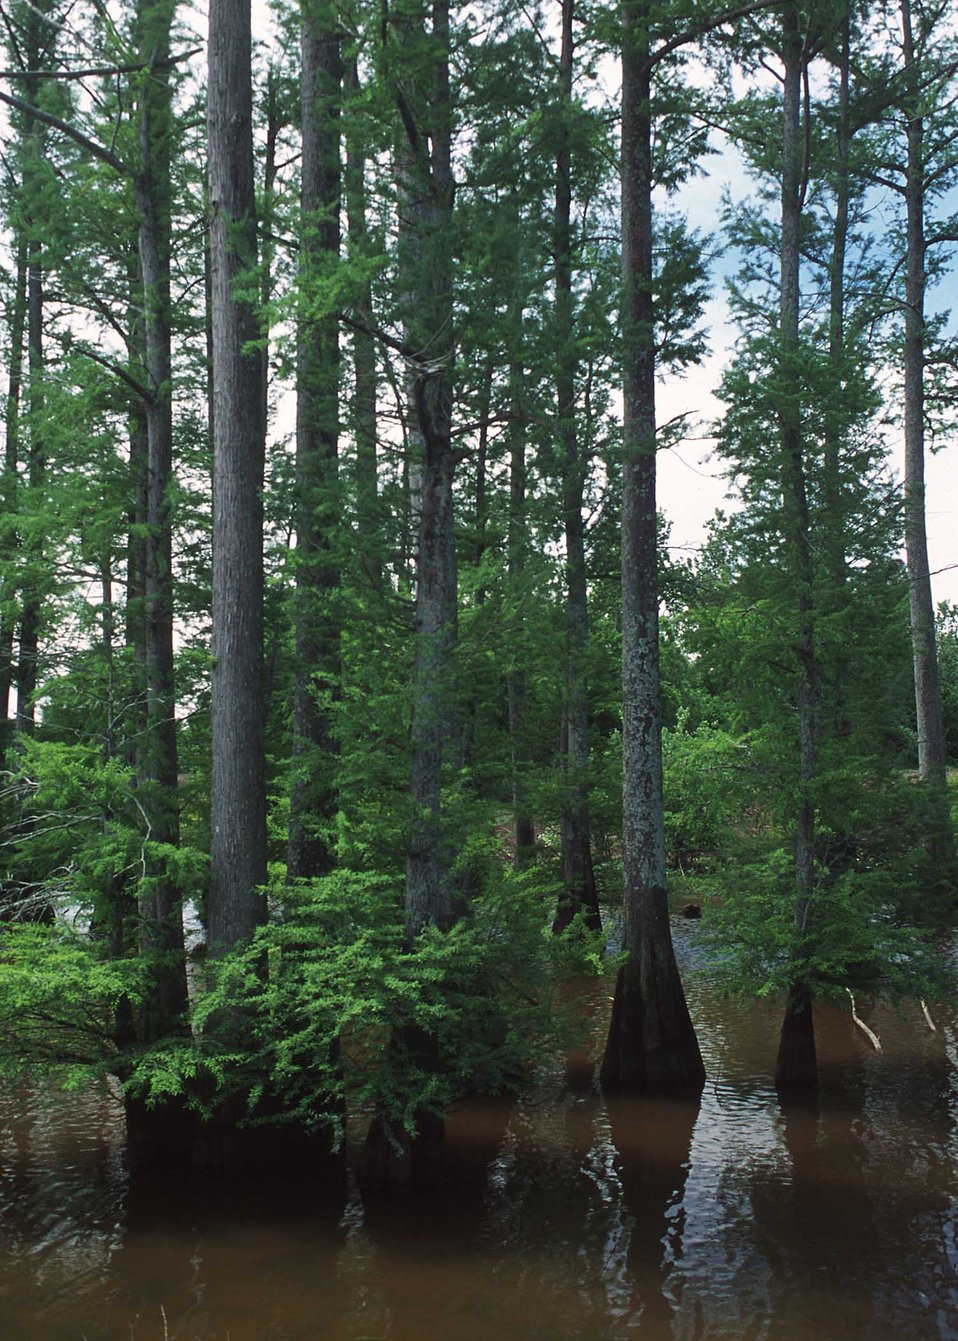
Remnant of a cypress/tupelo wetland in an oxbow in central Mississippi. The land is entered into the Wetlands Reserve Program.